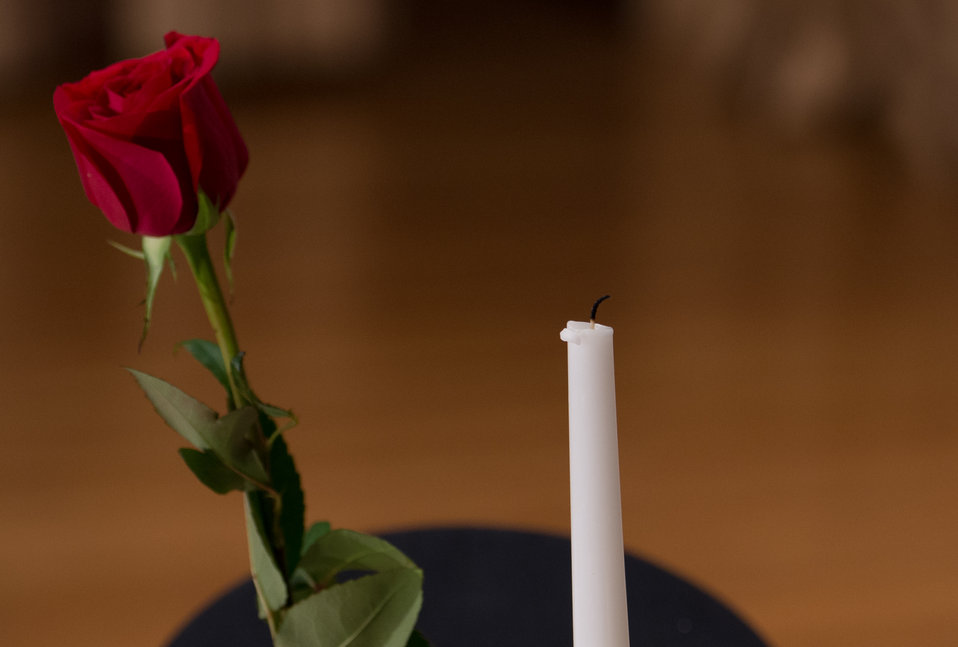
The extinguished candle flame at the Prisoner of War/Missing in Action Missing Man Table, signifies it's retirement at the 2013 U.S. Department of Agriculture (USDA) Veterans’ Day Observance, whose theme is “VALOR, COURAGE, SACRIFICE – HONORING ALL WHO SERVED,” in Washington, DC, on Wednesday, November 20, 2013.